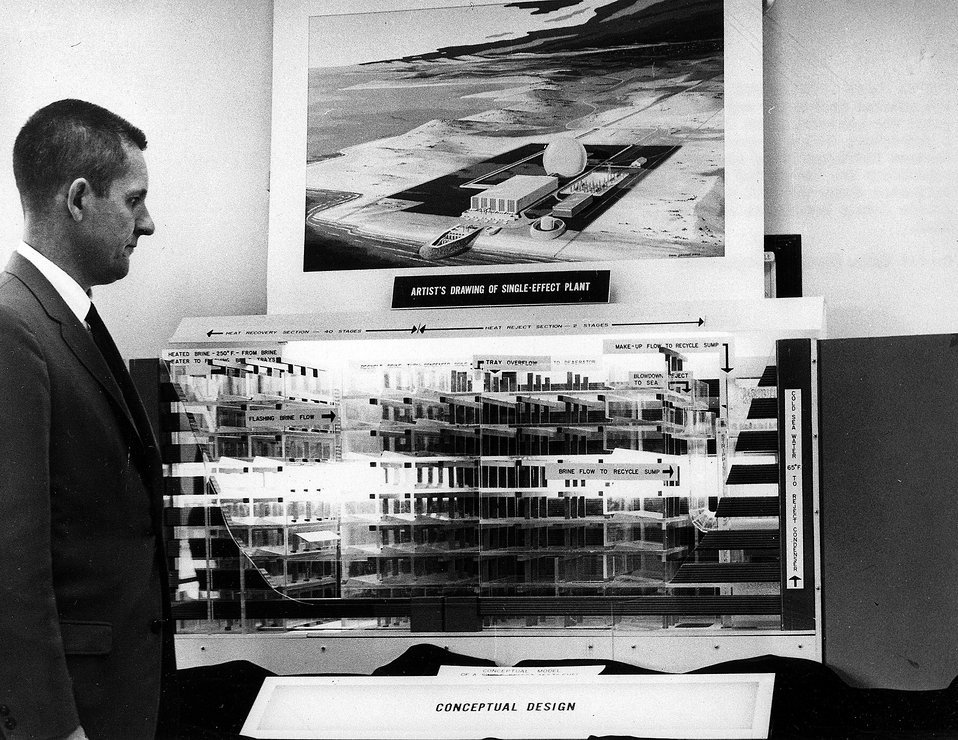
A scale model of a 250 million gallon per day multiflash desalination plant for converting sea water to fresh water-A conceptual design prepared by the Oak Ridge Gaseous Diffusion Plant and the Oak Ridge National Laboratory for the Office of Saline Water. Circa 1966.